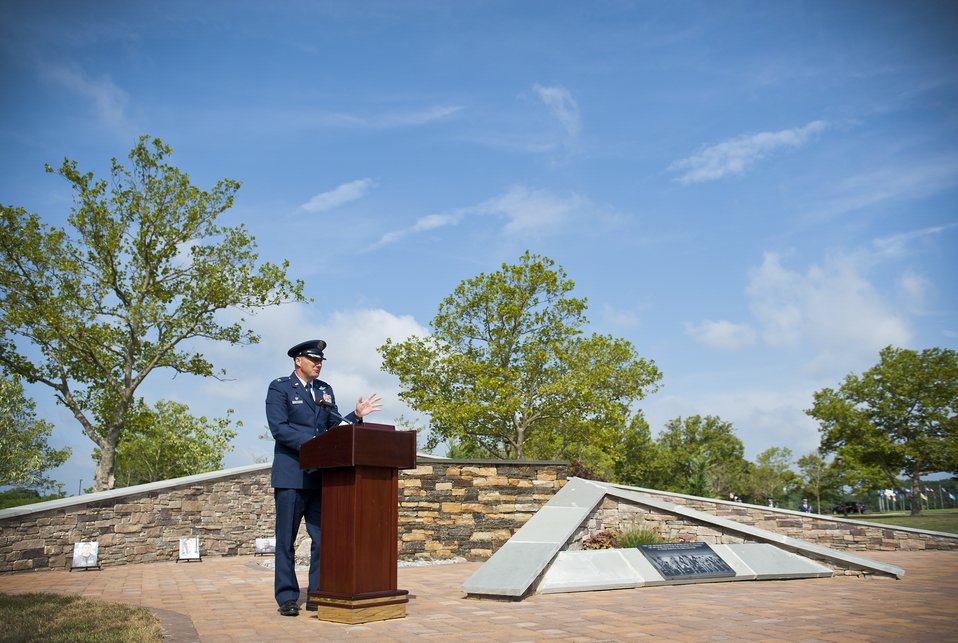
Air Advisor Memorial dedication

Colonel Olaf Holm, the commandant of the Air Advisory Academy, gives a
speech during the Air Advisor Memorial dedication ceremony at Joint
Base McGuire-Dix-Lakehurst, N.J., July 27, 2012. Holm was the creative
force behind the memorial project.